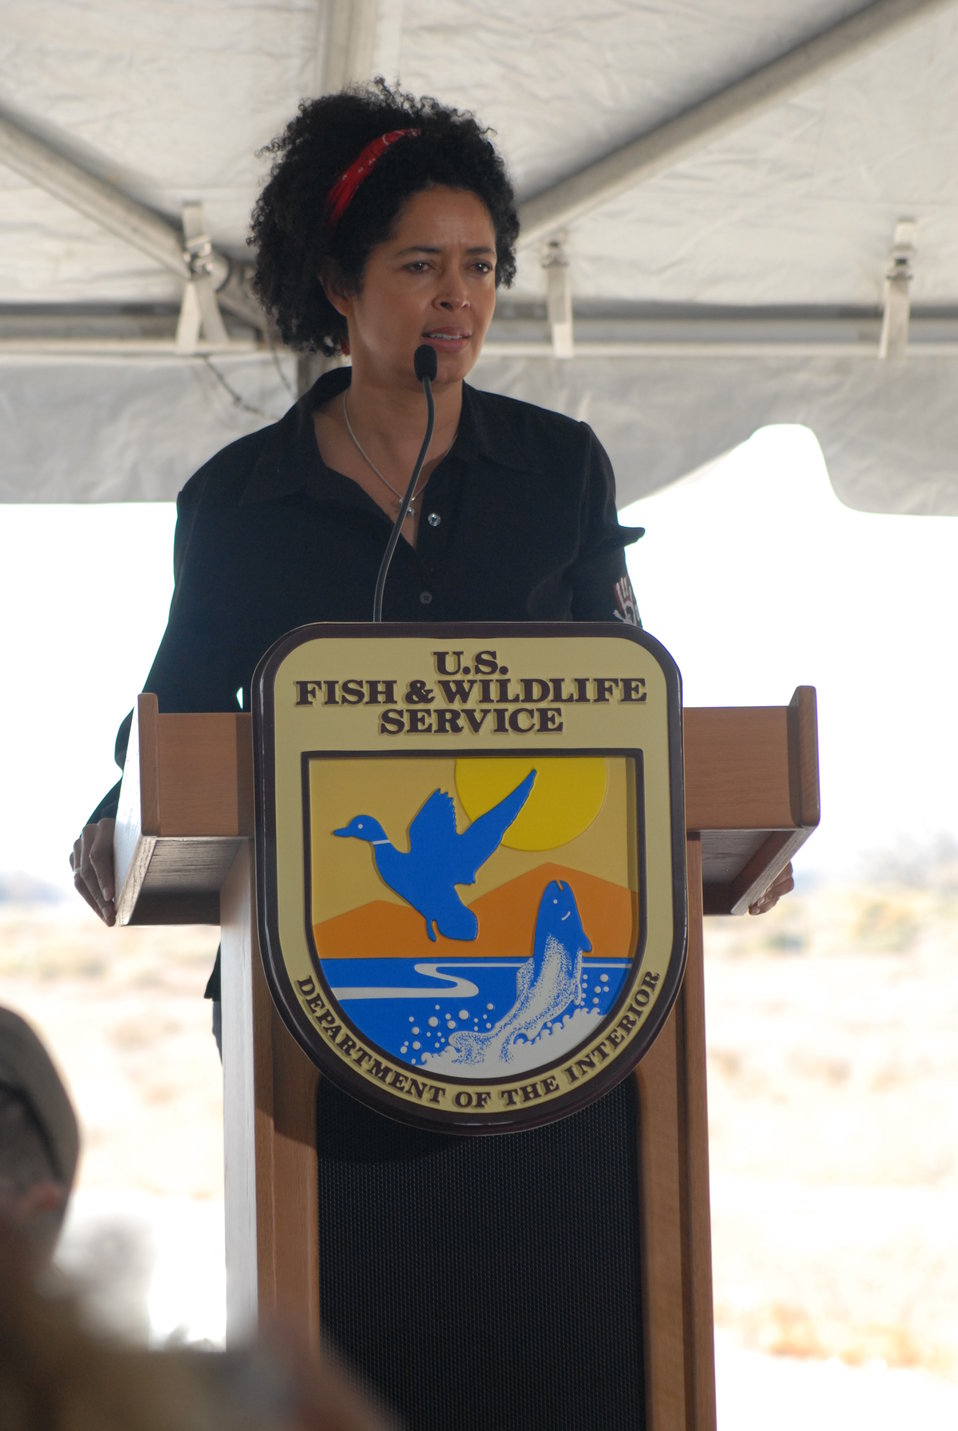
Dr. Paula Kahumbu, wildlife conservationist and CEO of WildlifeDirect, speaks at the U.S. Ivory Crush.